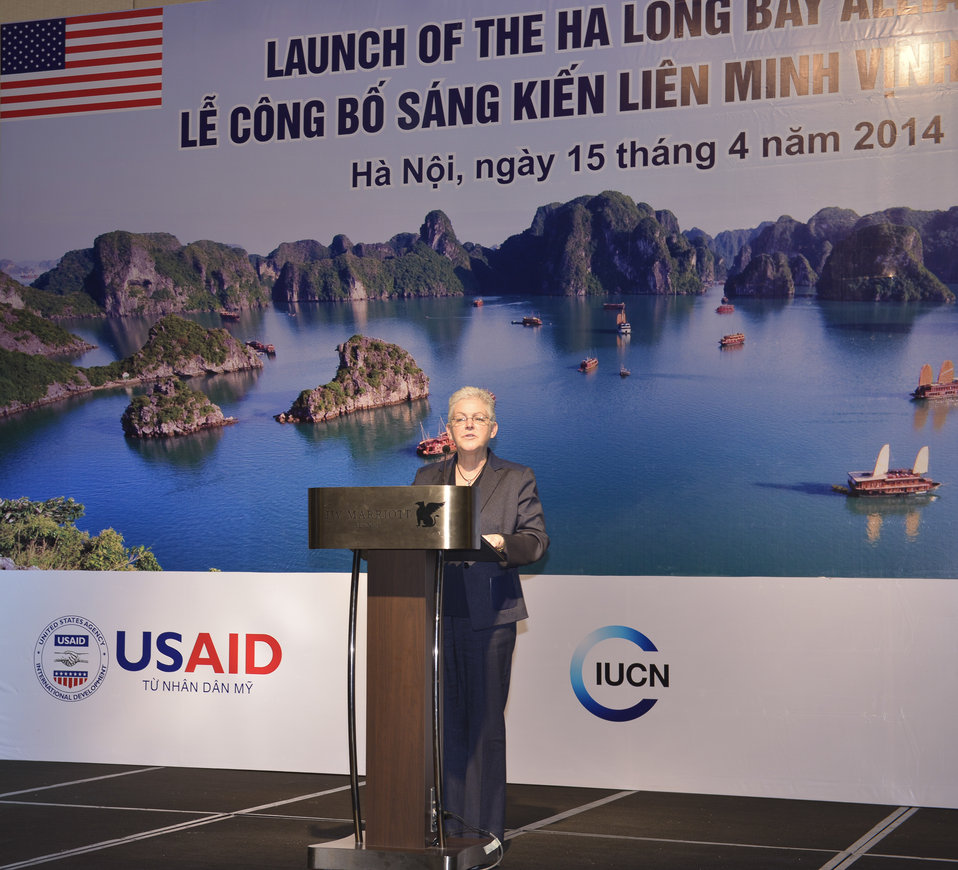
U.S. Environmental Protection Agency Administrator Gina McCarthy speaks at the launching ceremony.

Hanoi, April 15, 2014.